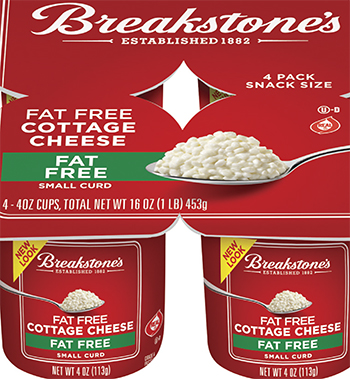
RECALLED – Cottage Cheese products

May 17, 2014 – Product Recall – Kraft Foods Group Voluntarily Recalls Select Cottage Cheese Products Due to Out-of-Standard Storage Temperatures
Certain Knudsen Cottage Cheese, Breakstone’s Cottage Cheese, Simply Kraft Cottage Cheese and Daily Chef Cottage Cheese Products Included in the Recall
.